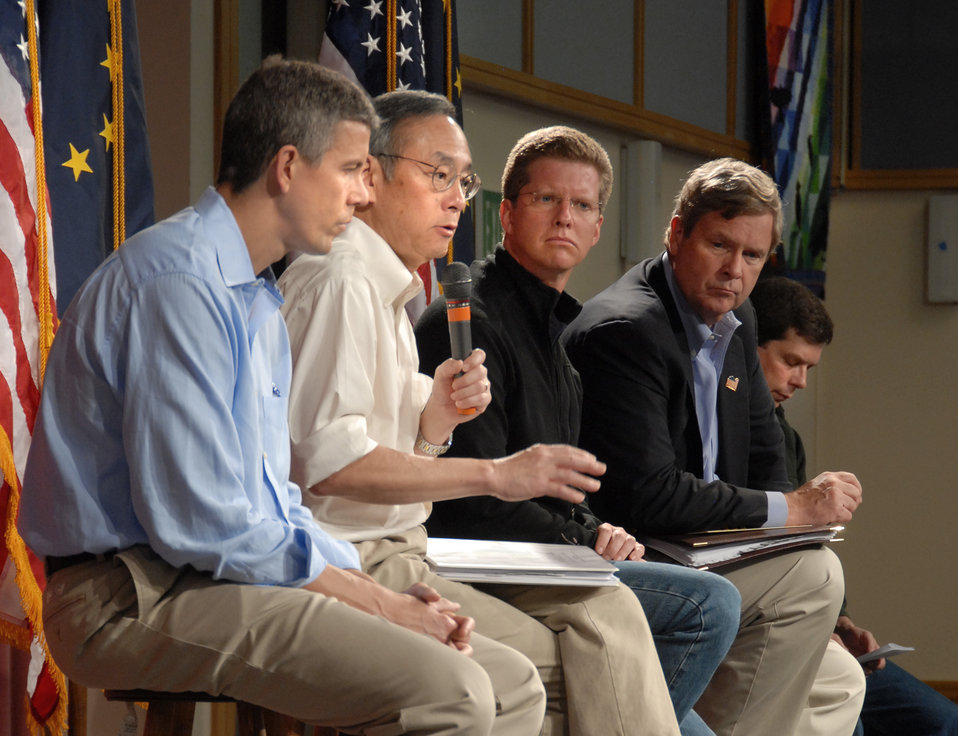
Rural Tour 0132

Rural Tour Alaska Aug 2009